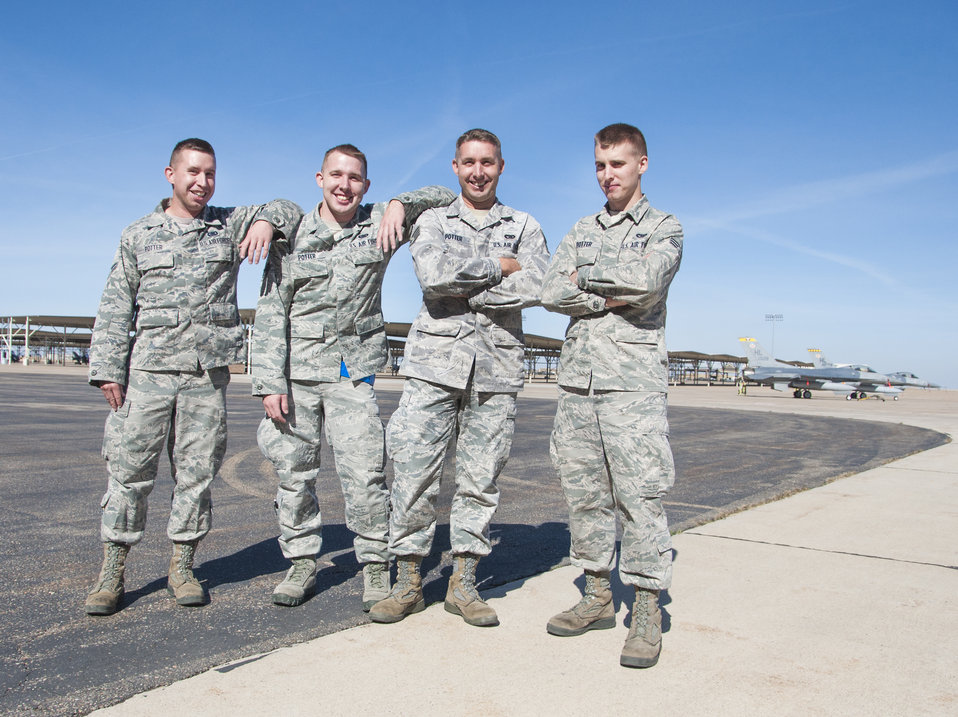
His brother's keeper

Airman 1st Class Timothy Potter, left, stands next to his three brothers Senior Airman David Potter, Staff Sgt. Andrew Potter, and Senior Airman Samuel Potter, all with the wing’s 67th Aerial Port Squadron. Timothy serves alongside his four brothers in the 419th Fighter Wing.